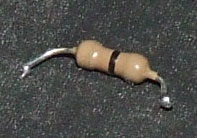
I am the author, just took a picture of resistor...